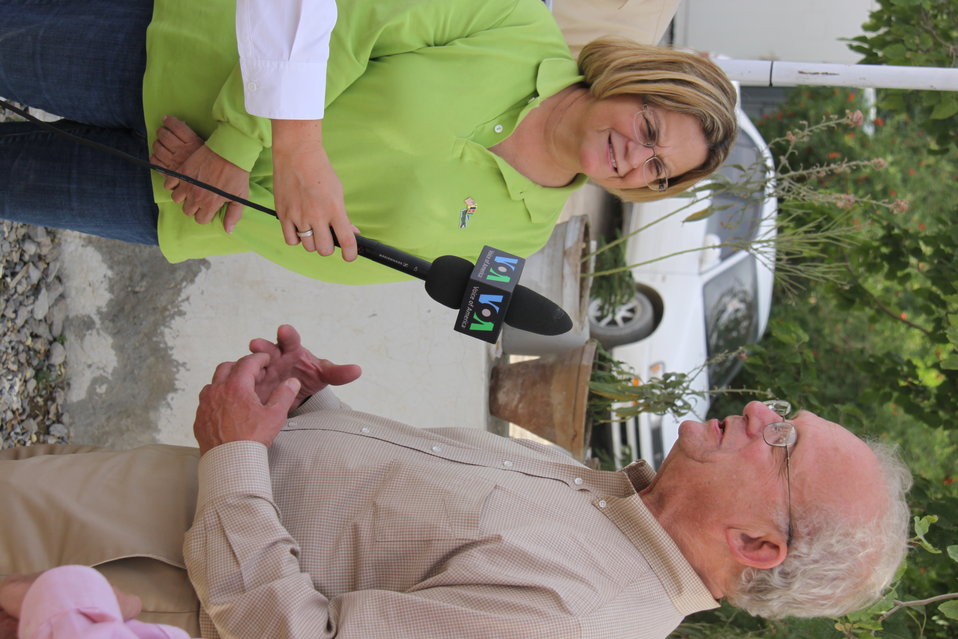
Meeting with Local Leaders in Kandahar